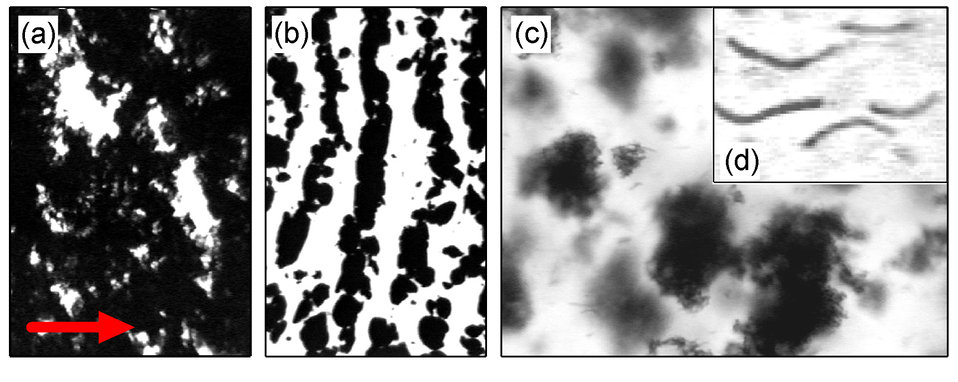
Add Nanotubes and Stir--With the Right Force

NIST researchers have mapped the relationship between stirring force and nanotube arrangement, an advance key to the processing of new nanocomposite materials. Images show the evolution from solid-like nanotube networks (a) to macroscopically shear banded fluids (b) to small isolated nanotube aggregates (c) to individually dispersed and aligned carbon nanotubes (d).